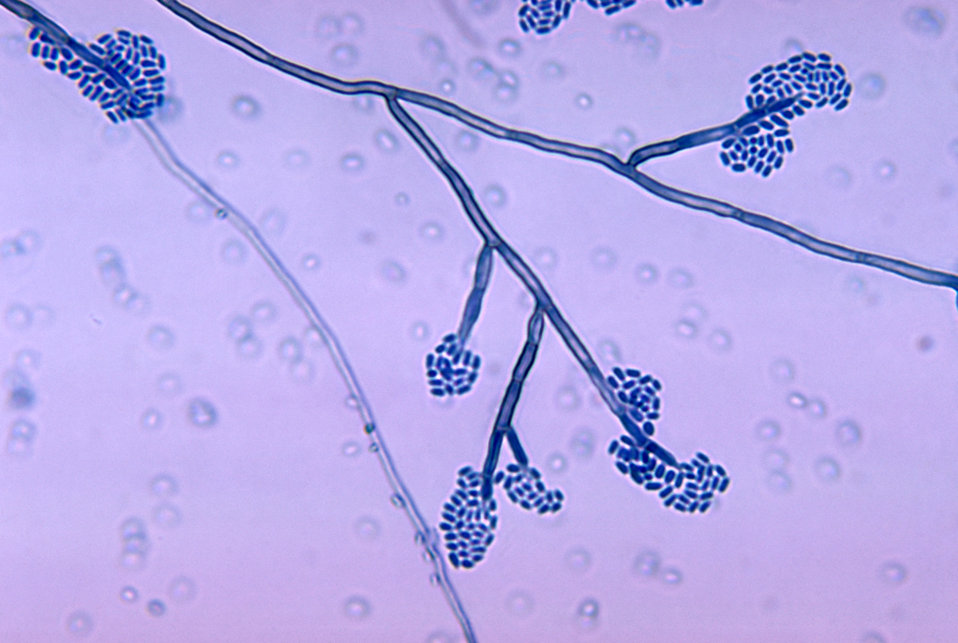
This photomicrograph reveals the conidiophores of the fungus Exophiala jeanselmei.